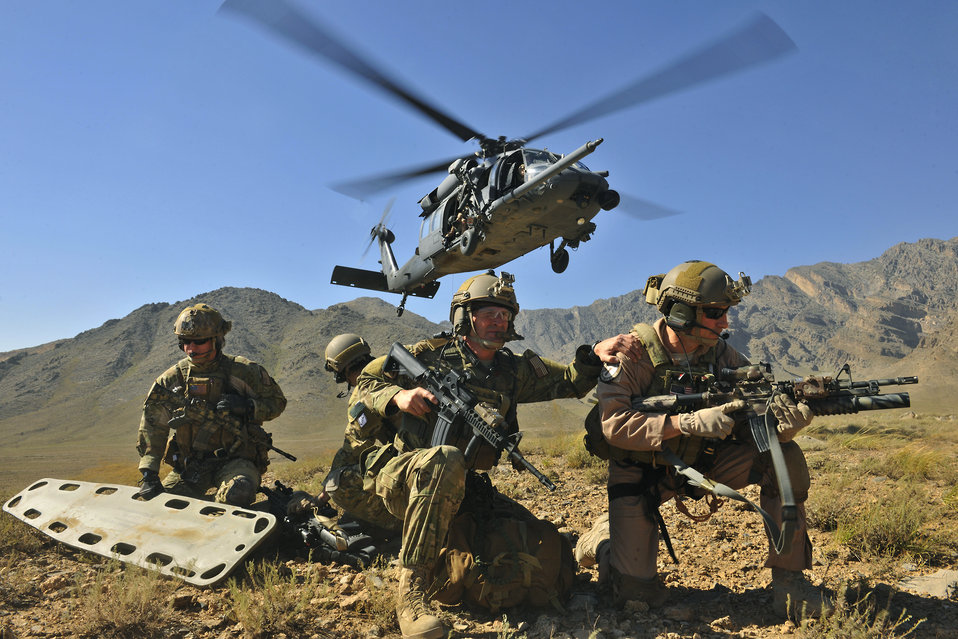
Pararescueman train to help save lives

An HH-60G Pave Hawk hovers over pararescuemen and Brig. Gen. Jack L. Briggs, the 455th Air Expeditionary Wing commander, during a training mission at Bagram Airfield, Afghanistan, Sept. 24, 2010. The training mission provided a glimpse of what the 33rd Expeditionary Rescue Squadron brings to the fight and the capabilities it provides to combat commanders.